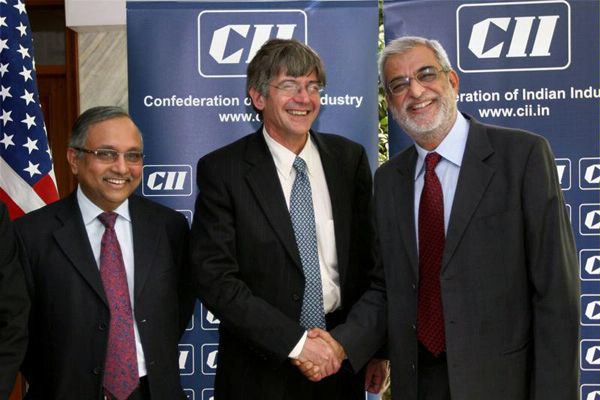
Deputy Secretary of State James Steinberg With Indian Industry Leaders

Deputy Secretary of State James Steinberg meets with Indian industry leaders at the Confederation of Indian Industries luncheon (CII) in New Delhi, India, April 21, 2010.